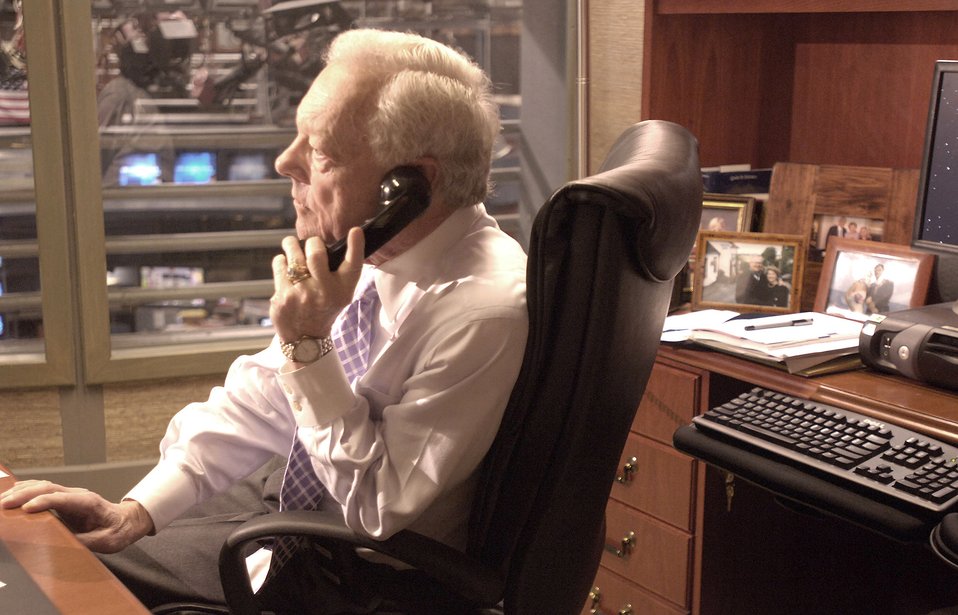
CBS news anchor proud of Air Force past

Bob Schieffer, chief Washington correspondent for